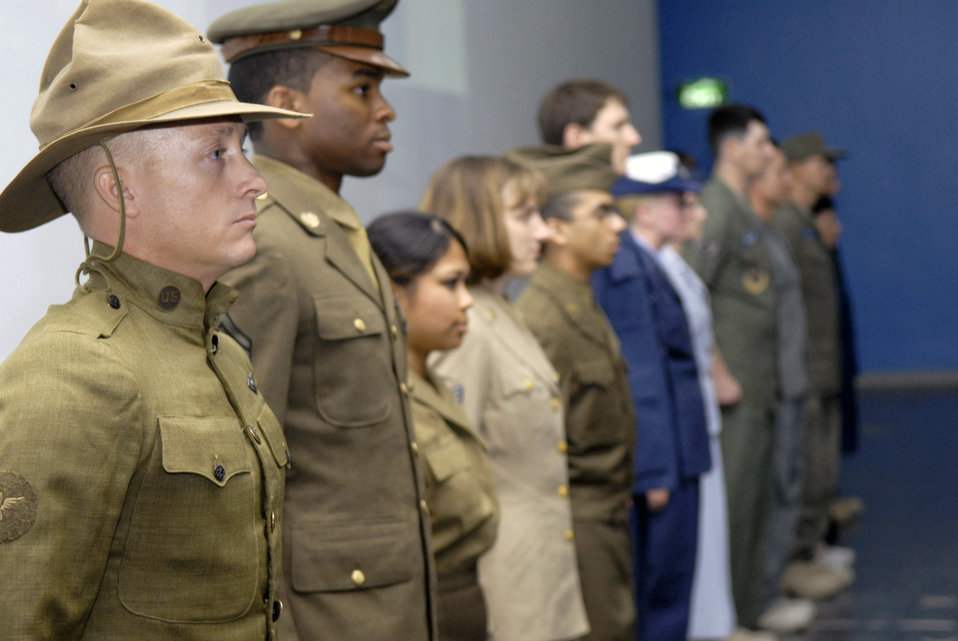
Operation Uniform Delta highlights heritage

Airmen modeling historical Air Force uniforms line up during Operation Uniform Delta April 27 at a base in Southwest Asia. Operation Uniform Delta was an event displaying the history of the Air Force uniform and the changes that it underwent through the years.